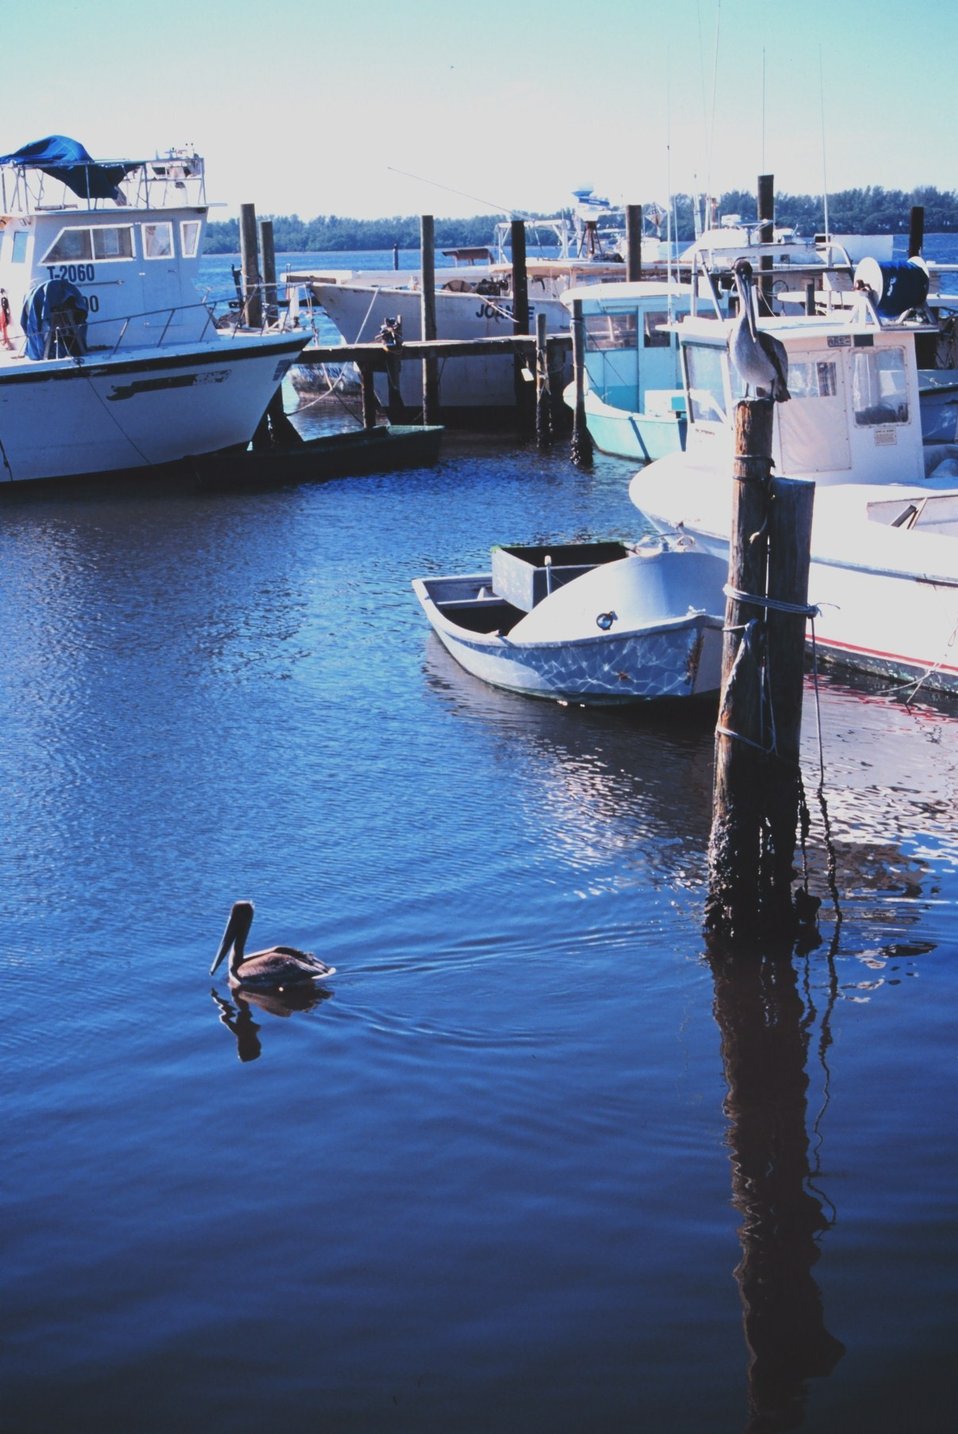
Pelicans waiting for a free lunch at the A. P. Bell Fish Co.